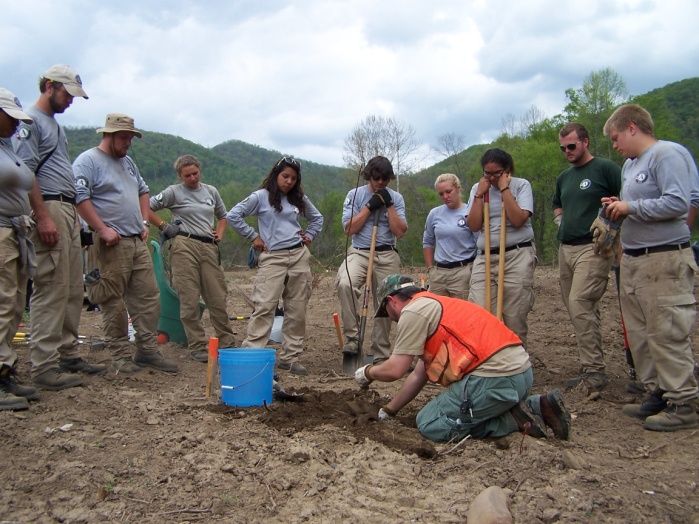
Tree planting at Pennington Gap project

Justin Laughlin, VDGIF Project Coordinator demonstrating riparian tree planting techniques to AmeriCorp volunteers at Pennington Gap restoration project.